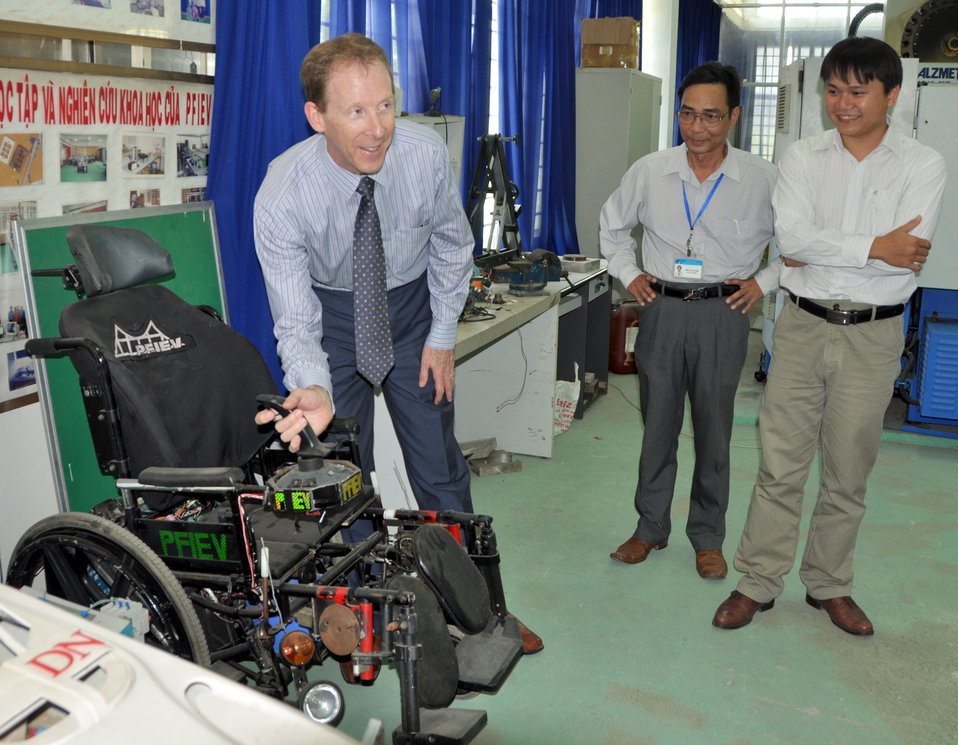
USAID Mission Director visits Danang University of Technology

Danang, July 17, 2013